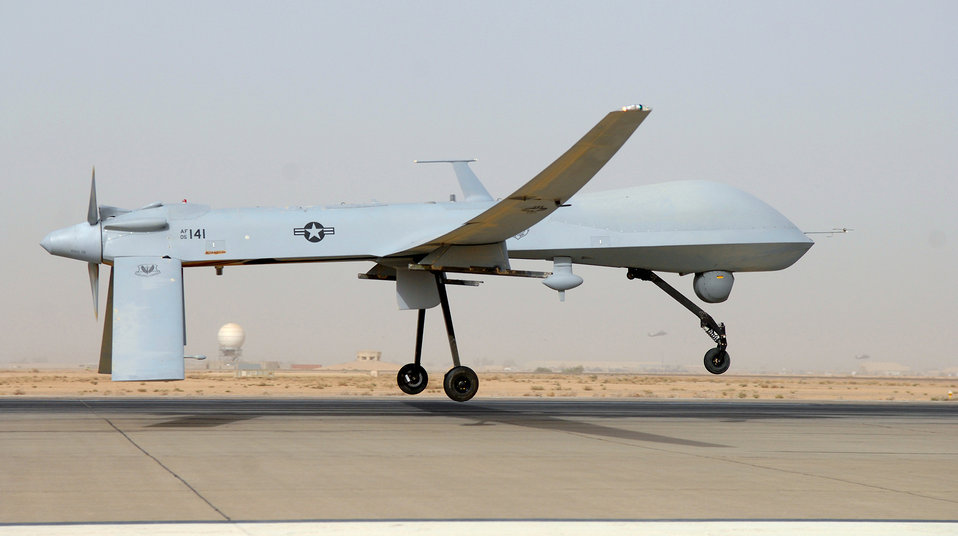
ISR supprt for Haiti relief

RQ-1 Predators, like the one shown here, are being deployed from Creech Air Force Base, Nev., to provide intelligence, surveillance and reconnaissance capabilities in support of relief efforts in Haiti. The Predator team is from the 432nd Wing at Creech AFB.